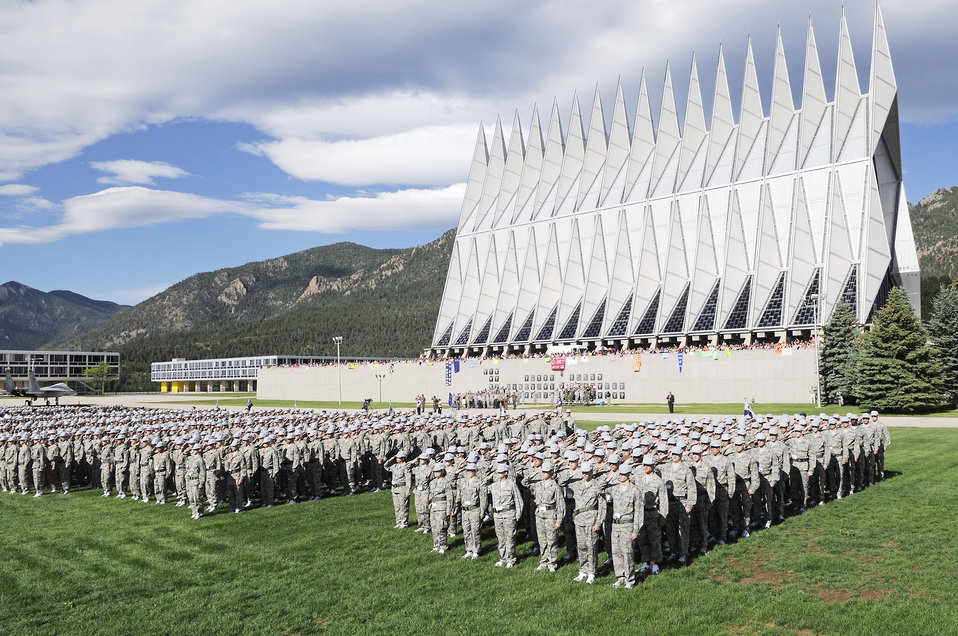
Present Arms!

More than 1,300 basic cadets salute June 26 during their first reveille formation at the U.S. Air Force Academy in Colorado Springs, Colo.